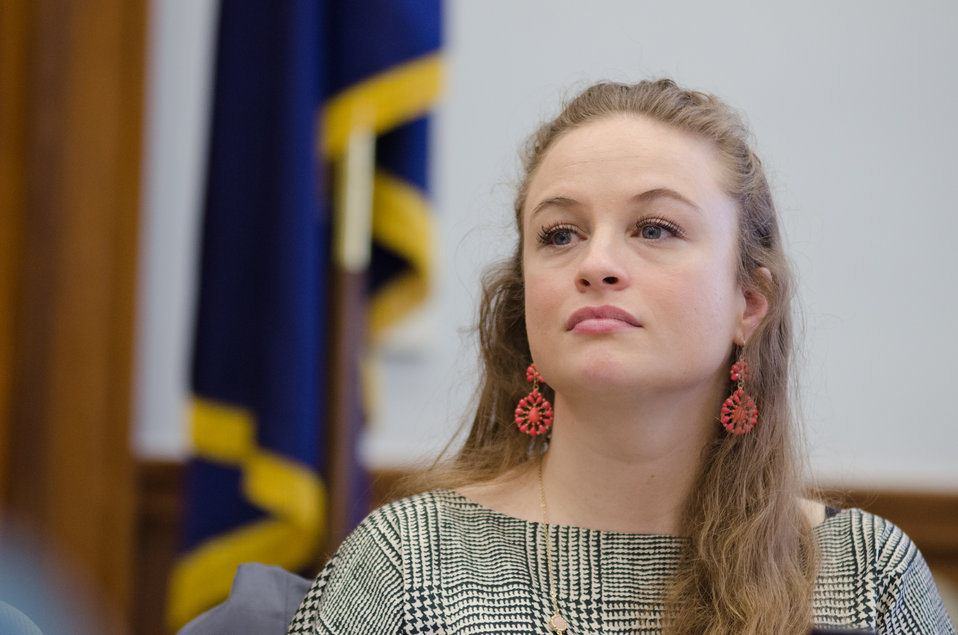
U.S. Department of Agriculture (USDA), Rural Development, Rural Utilities Service Special Assistant Sara Buettner-Connelly, right, listens to Secretary Tom Vilsack, left, during a Brown Bag Lunch that Secretary Vilsack periodically has with employees, in his conference room, on Tuesday, April 9, 2013, in Washington, D.C.